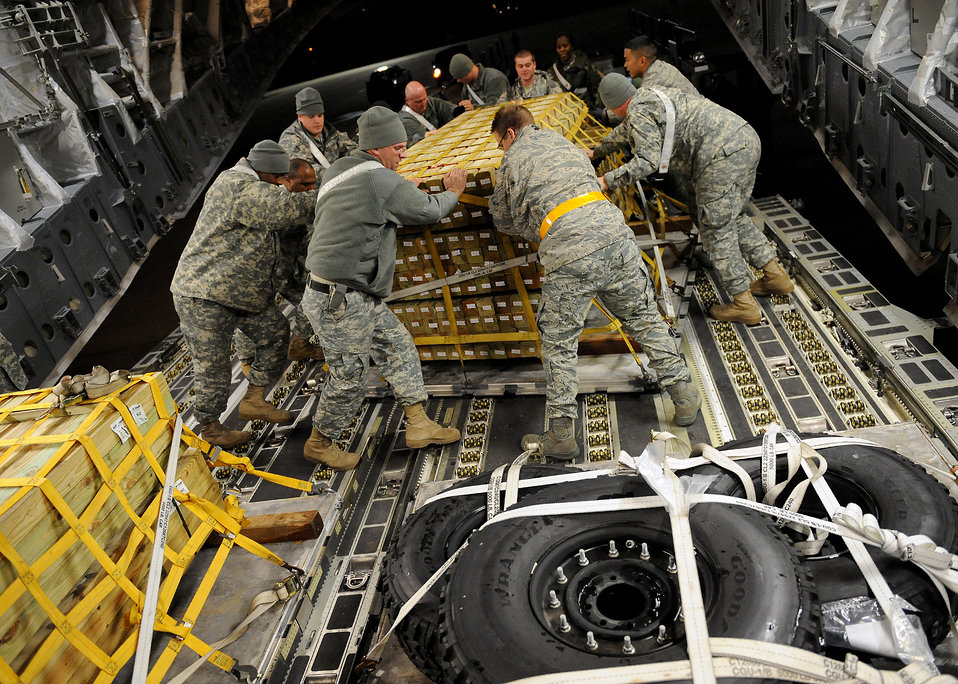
Cross-command communication fuels Haiti relief efforts

Army and Air Force personnel work together to load supplies into a C-17 Globemaster III Jan. 22, 2010, at Langley Air Force Base, Va., in support Operation Unified Response.